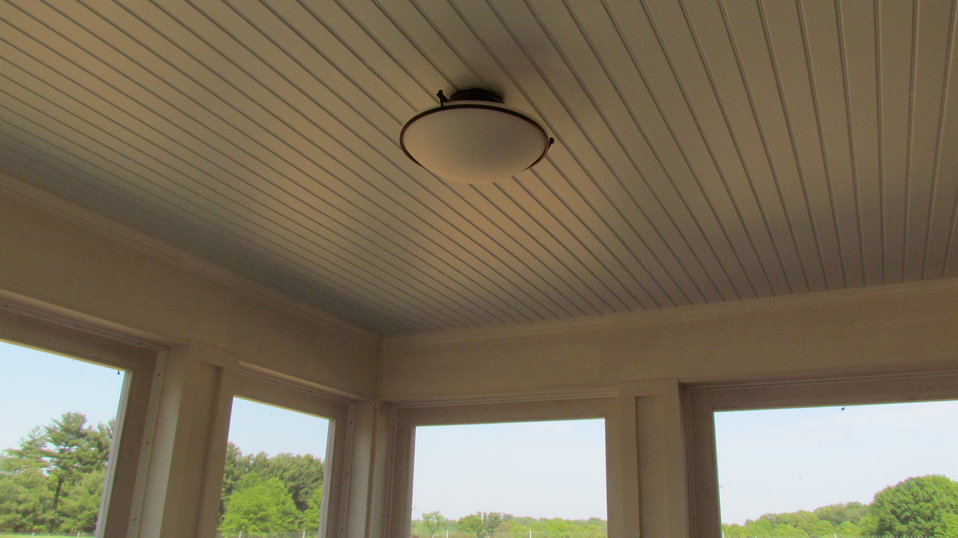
Interior ceiling of screened porch on north side of facility.